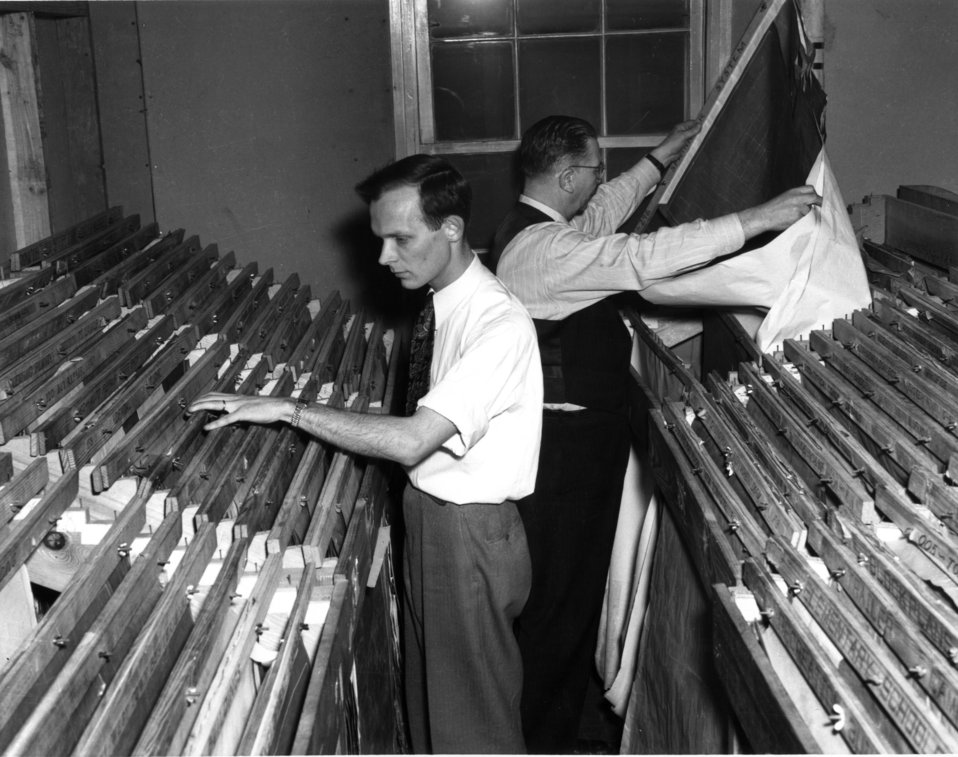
Services at Oak Ridge